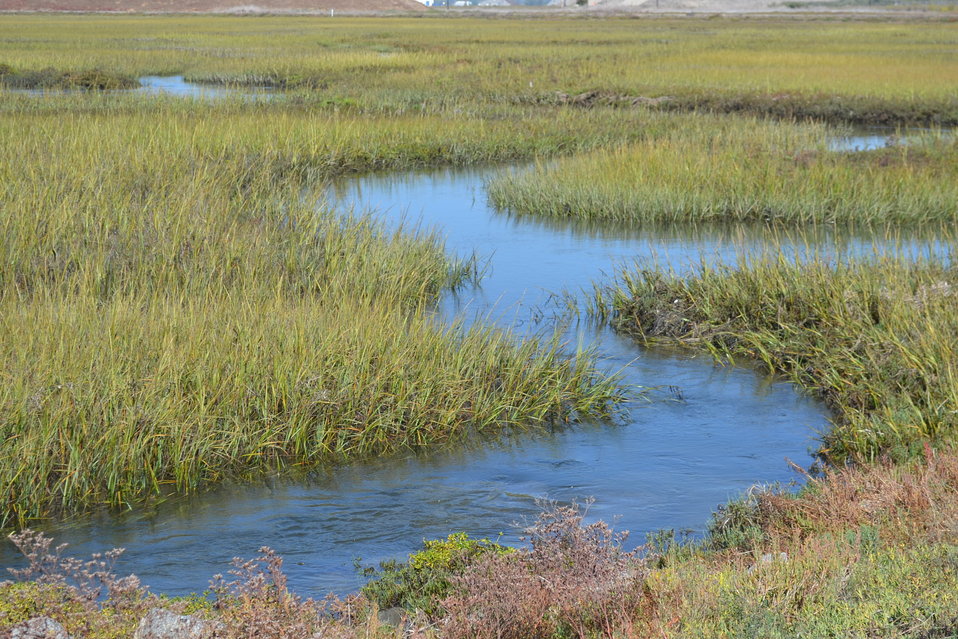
Cordgrass at Seal Beach National Wildlife Refuge

Seal Beach National Wildlife Refuge was the location of the last release of the season on September 29, 2011. Lisa Cox/USFWS